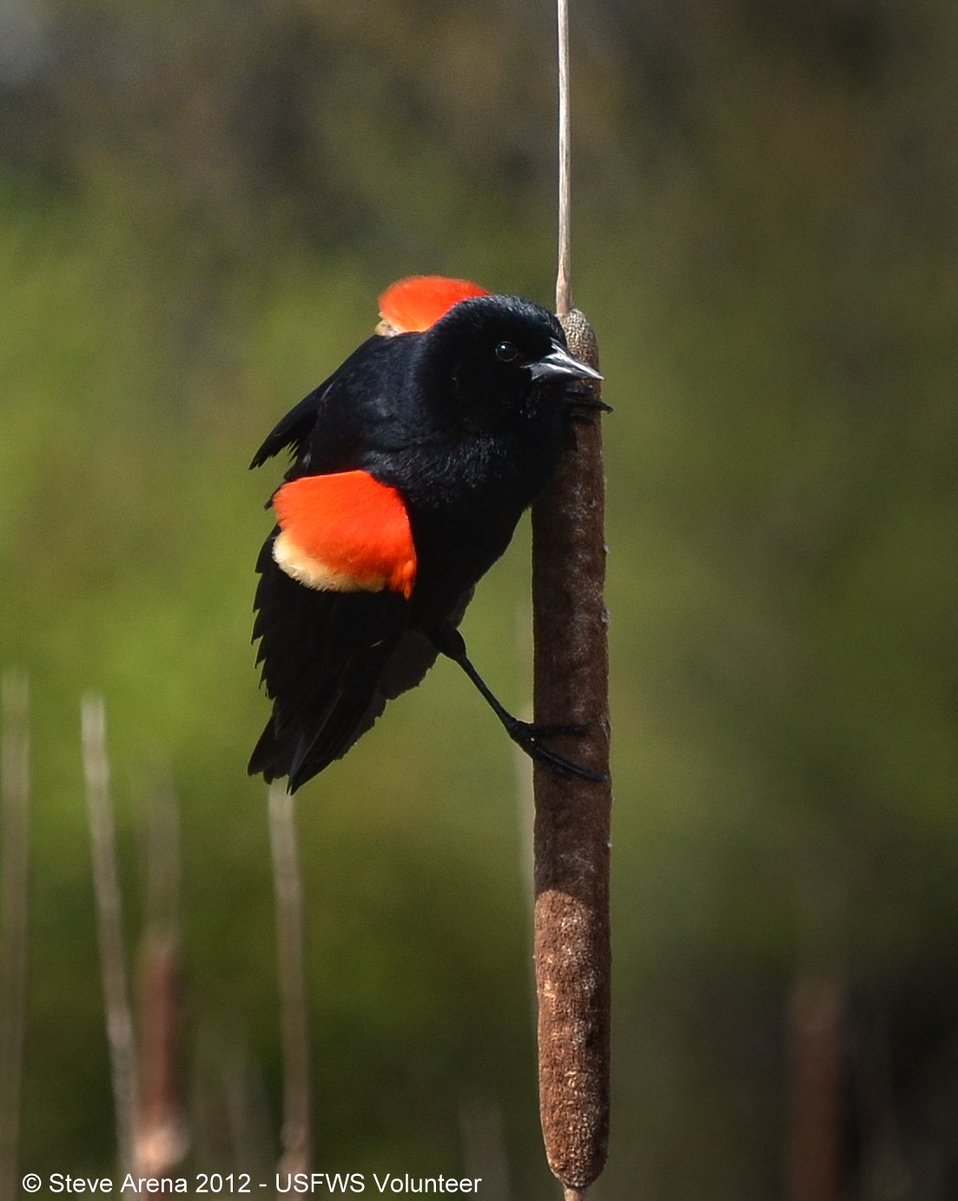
Red-winged Blackbird (Agelaius phoeniceus) Upper Pool Marshbird Survey 06 May 2012

Red-winged blackbird at Great Meadows National Wildlife Refuge.